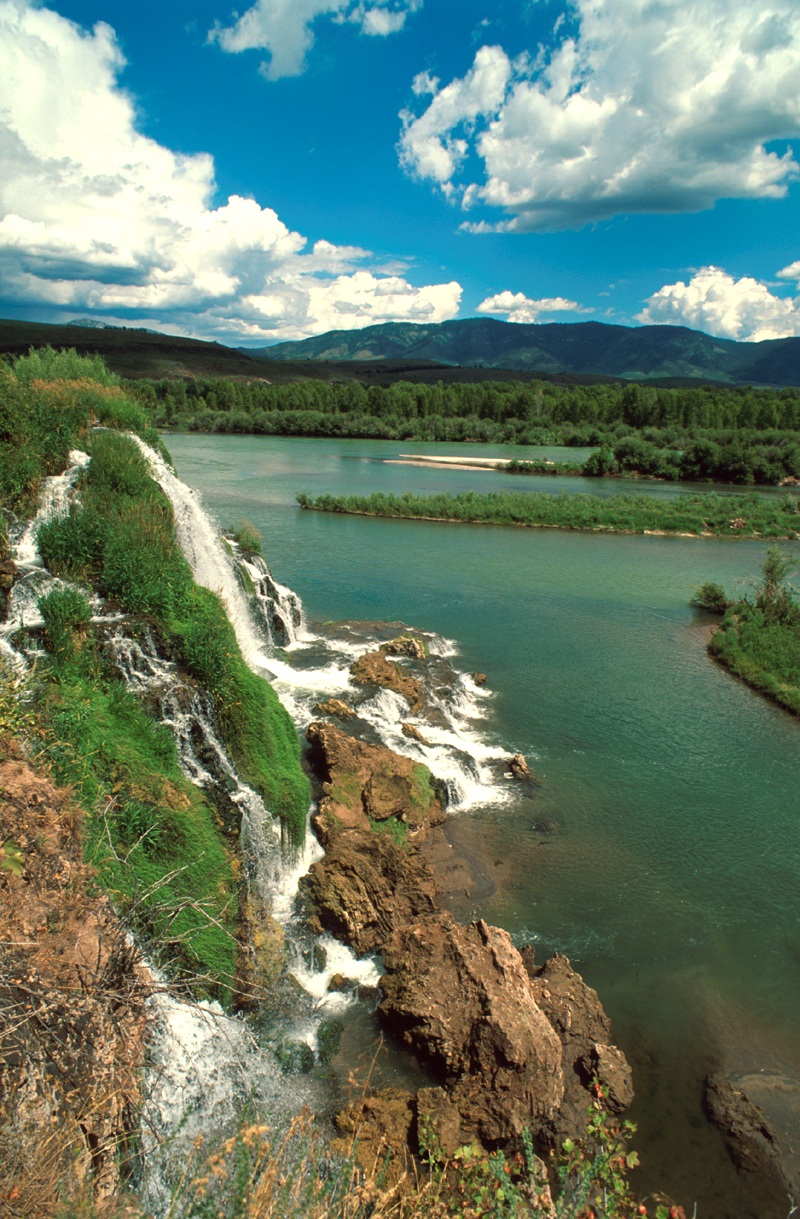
Fall Creek Falls Snake River Canyon Upper Snake River District